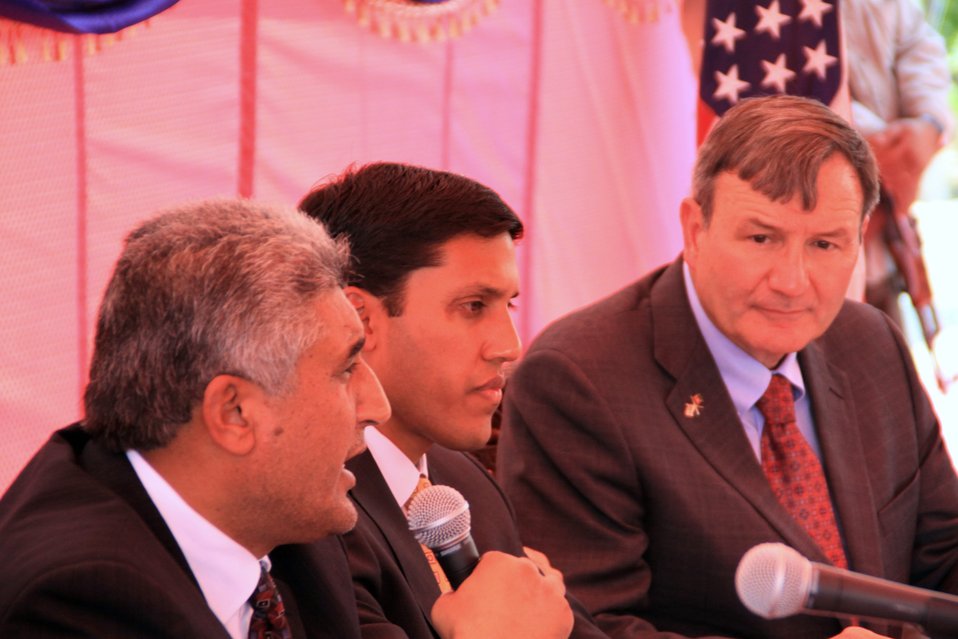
Badam Bagh Farm